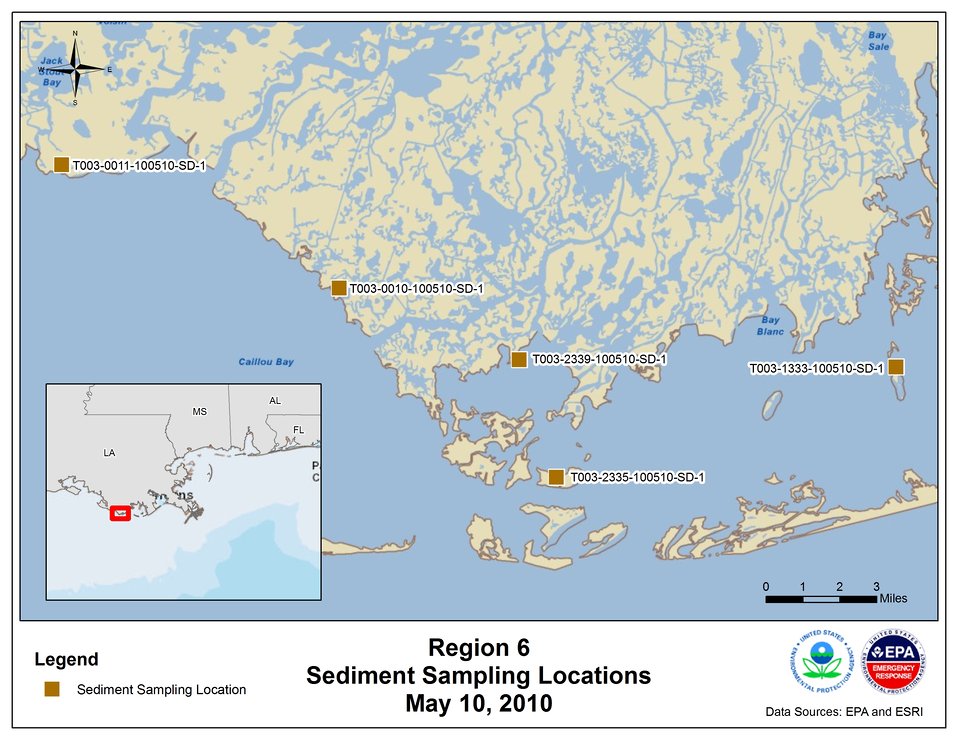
EPA Sediment Sampling Locations May 10, 2010